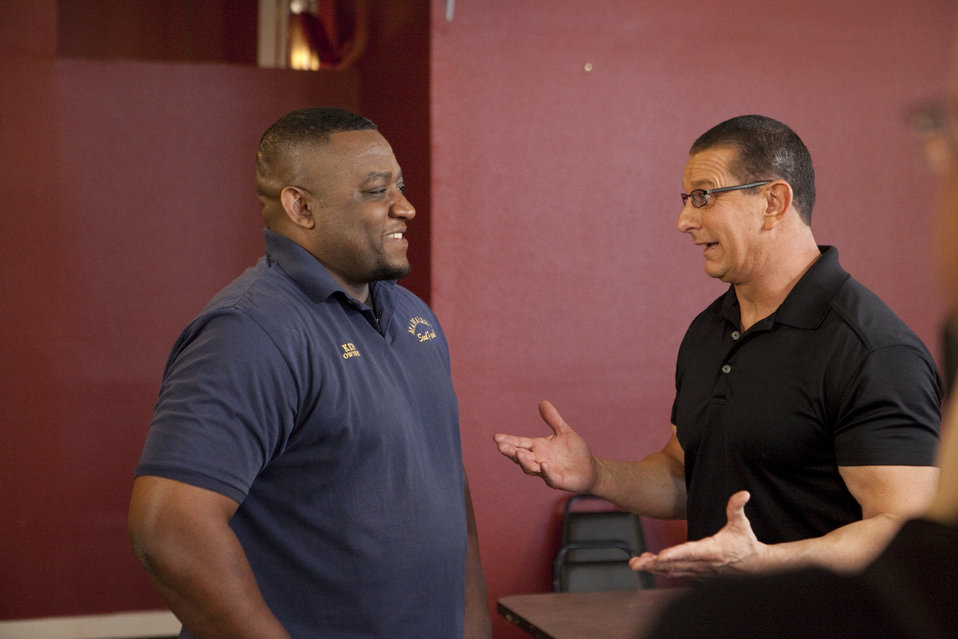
Airman does the 'Impossible'

Retired Tech. Sgt. Ken Lee (left) and celebrity chef Robert Irvine talk about Lee's business practices during an episode of